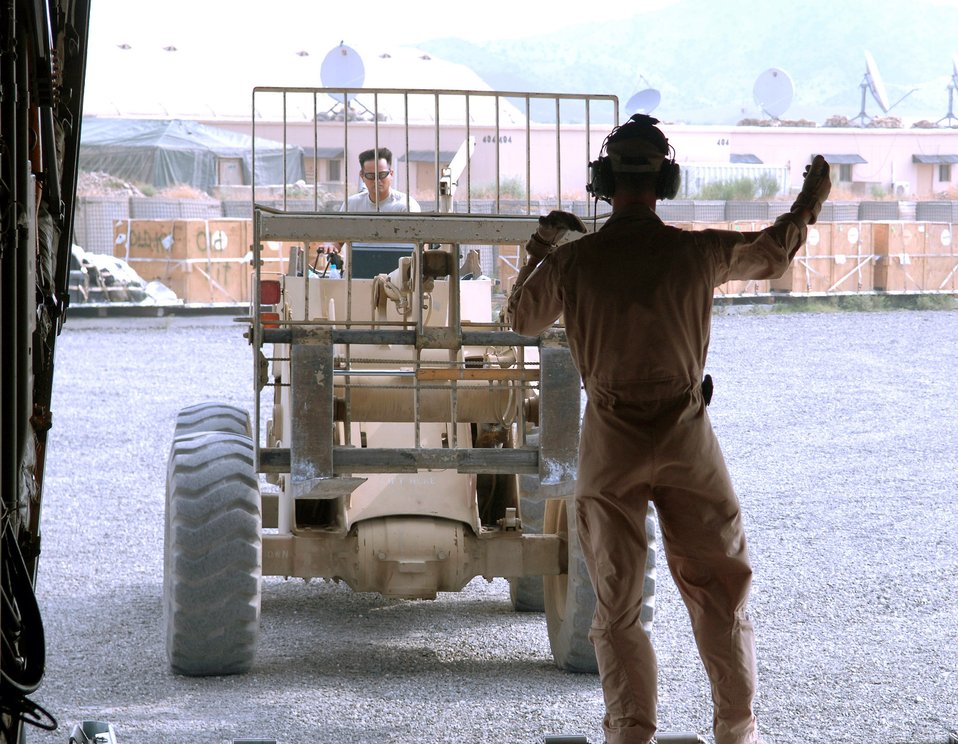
C-130 crews changing lives one mission at a time

Senior Airman Patrick Keefe guides a forklift to the cargo ramp of a C-130 Hercules to unload palettes at Forward Operating Base Salerno, Afghanistan. Airman Keefe is a 774th Expeditionary Airlift Squadron loadmaster deployed from Wyoming's Air National Guard from Cheyenne, Wyo.